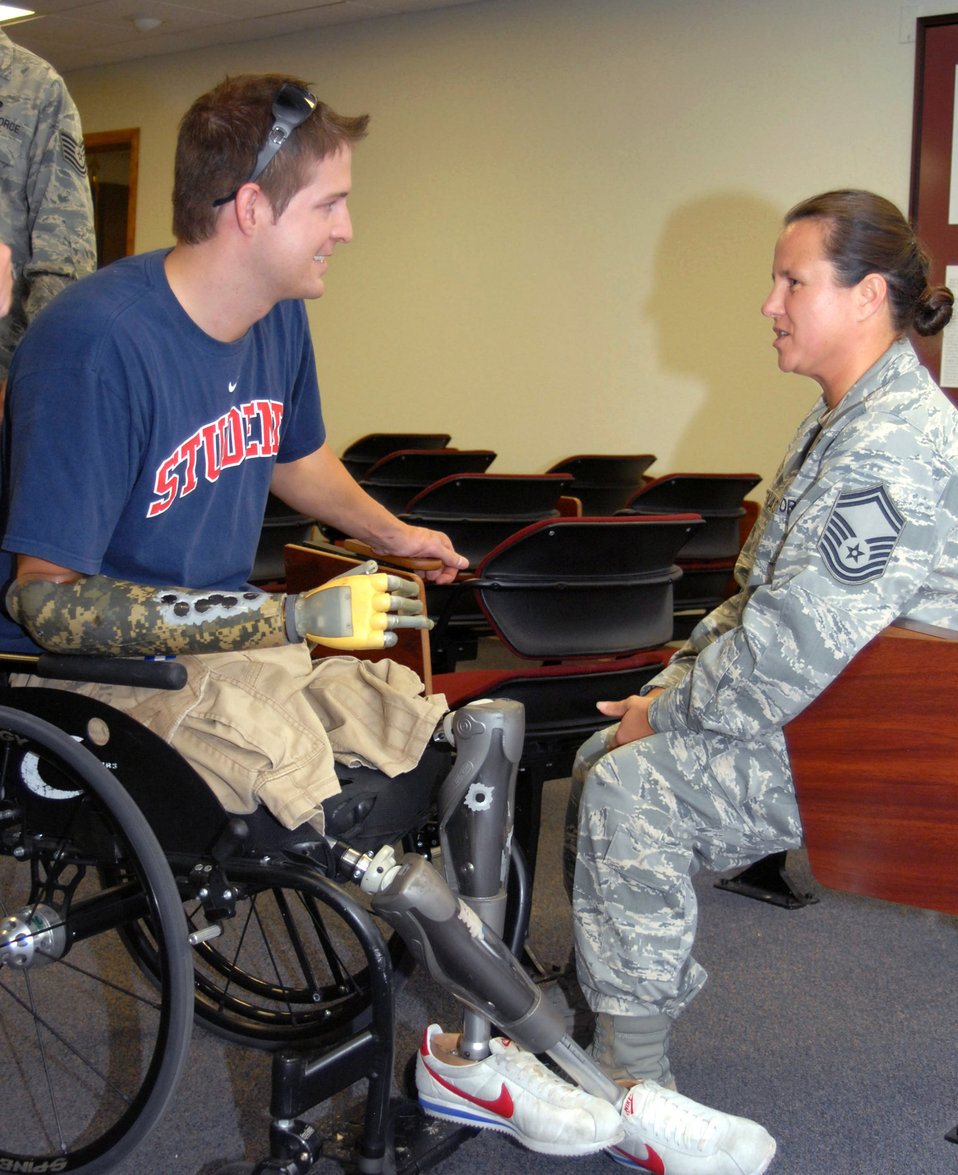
Goodfellow veteran relives experience for Airmen

Brian Kolfage Jr. speaks to Senior Master Sgt. Annette Whitenack July 2 at Goodfellow Air Force Base, Texas. Mr. Kolfage spoke about his experience on Sept. 11, 2004, when a rocket attack left him without legs and a right arm. Sergeant Whitenack was one of the first medical responders on scene after he was injured. Mr. Kolfage is a former 17th Security Forces Squadron defender and now a retired senior airman.